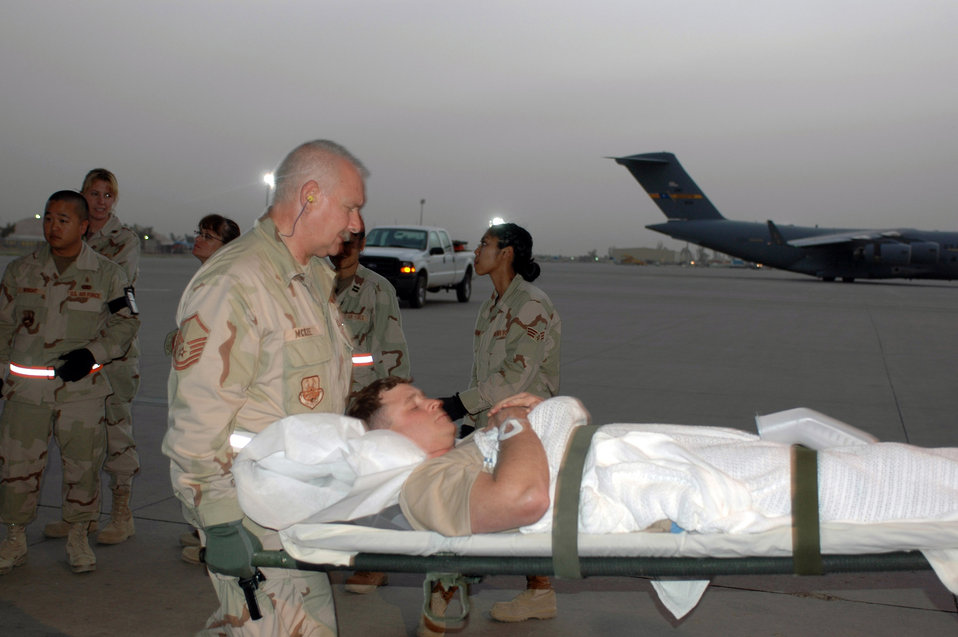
Aeromedical teams provide comfort, care in the air

Master Sgt. Duane McKee helps carry a wounded warrior to a C-130 Hercules June 13 at Balad Air Base, Iraq. A 379th Expeditionary Aeromedical Evacuation Squadron team picked up patients at Al Asad Air Base, Iraq, and here to take to Southwest Asia for further care. Sergeant McKee is assigned to the 332nd Expeditionary Operations Support Squadron,